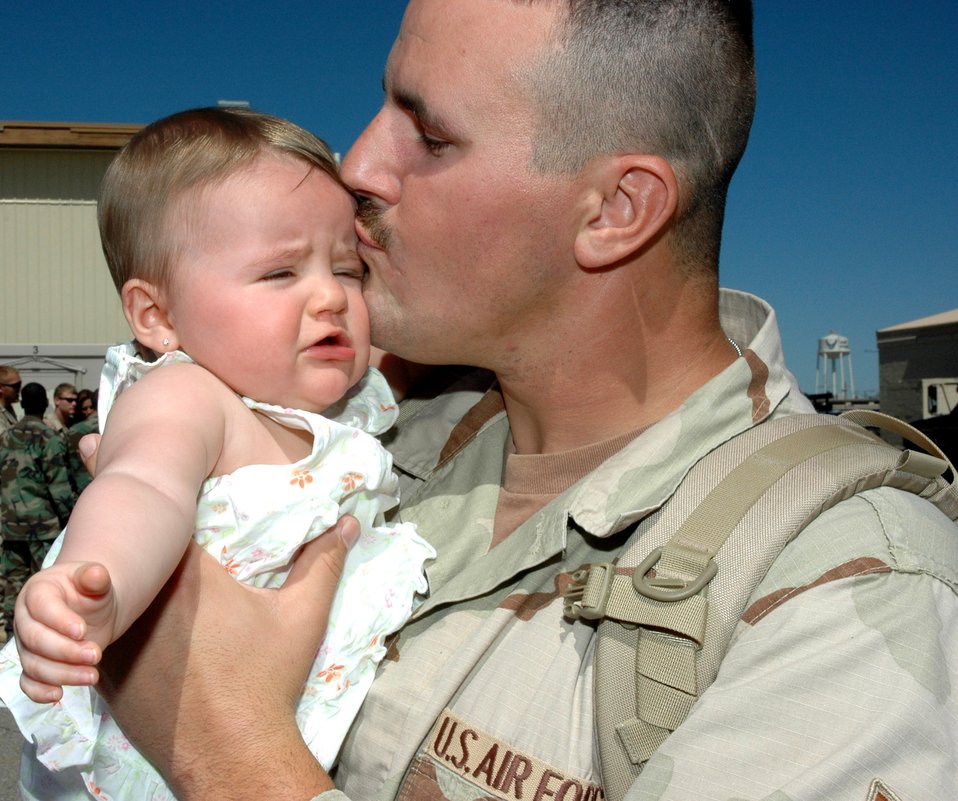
Airmen welcomed home at Mountain Home

Staff Sgt. Brent Rice reunites with his baby daughter, Kayden, after the sergeant and other members of the 366th Civil Engineer Squadron returned May 8 to Mountain Home Air Force Base, Idaho. The returning 35 deployed members served the past seven months at forward operating locations in Iraq and Afghanistan building new work centers and living quarters to accommodate additional forces arriving in the region.